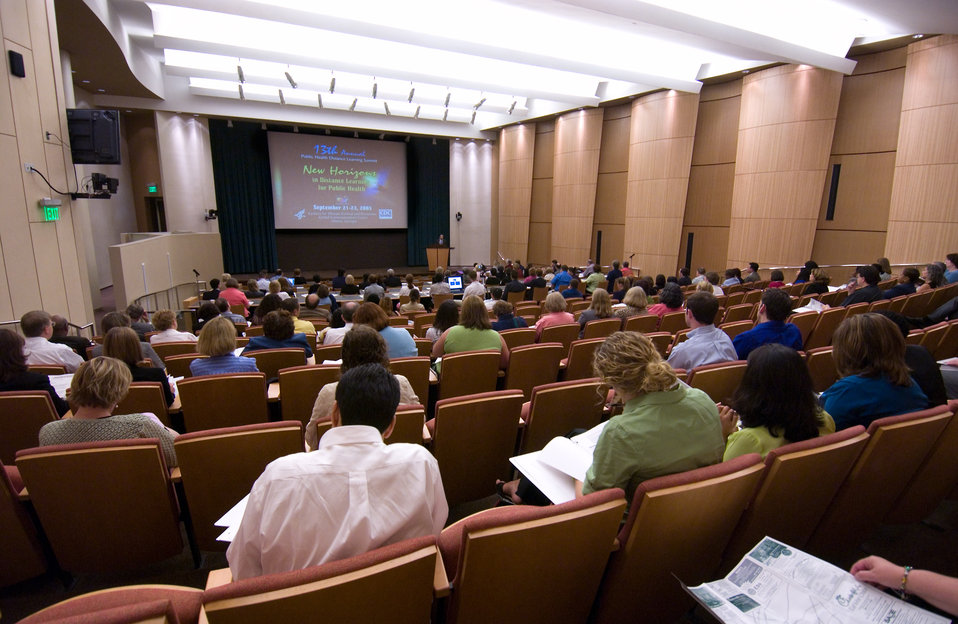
This photograph showed Distance Learning Coordinators (DLC) from the academic, clinical, governmental and non-governmental fields, while attending the 13th Annual Public Health Distance Learning Summit in September, 2005. The meeting was held on the Center for Disease Control's (CDC) Robal Campus in Atlanta, Georgia, at the new Tom Harkin Global Communications Center, otherwise known as Building 19.